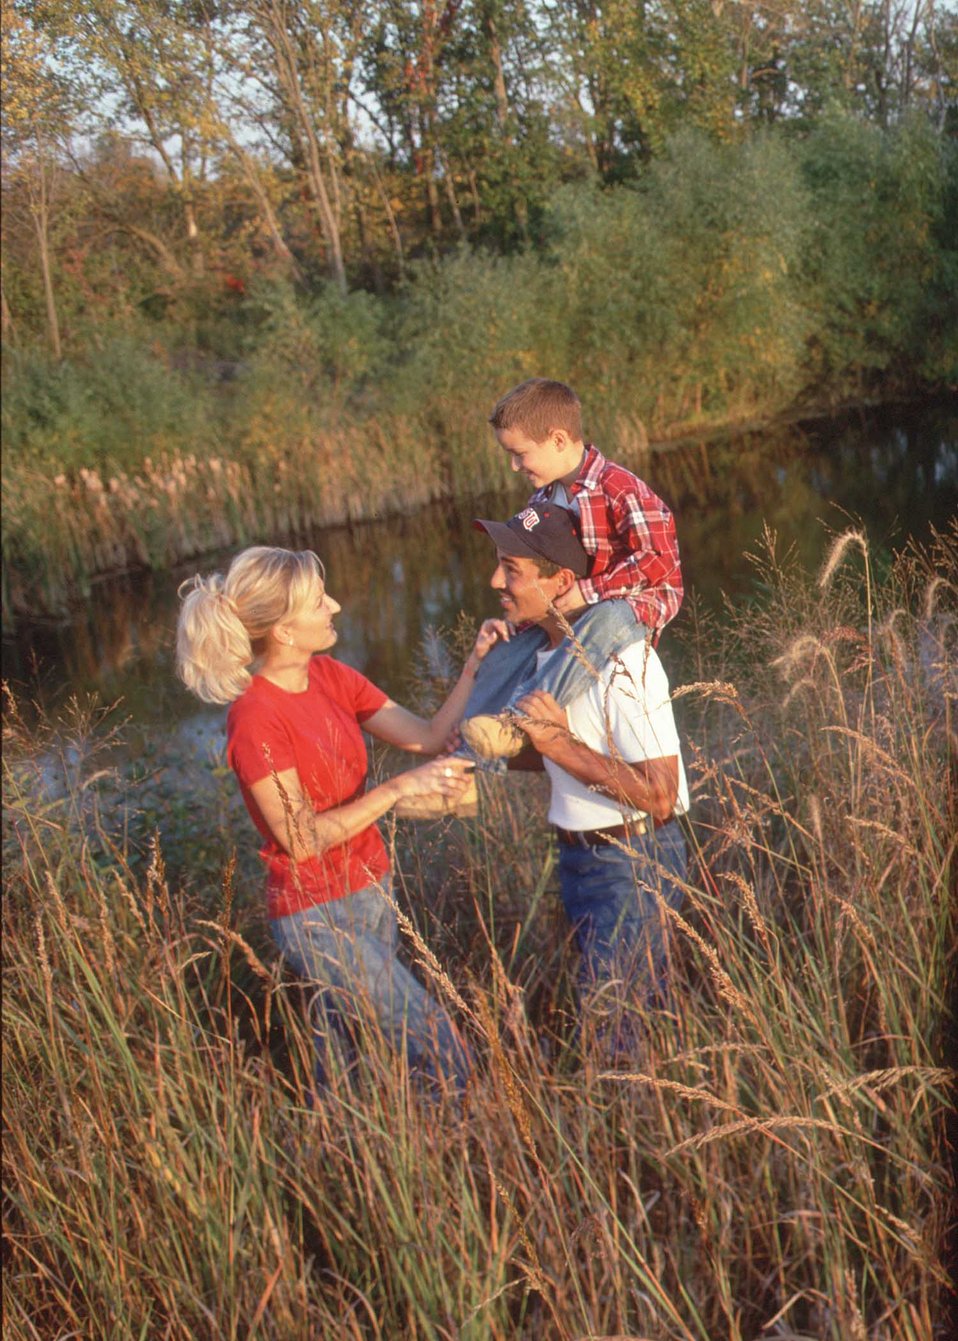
A family enjoys a farm pond and native grass plantings on a farm in central Iowa.